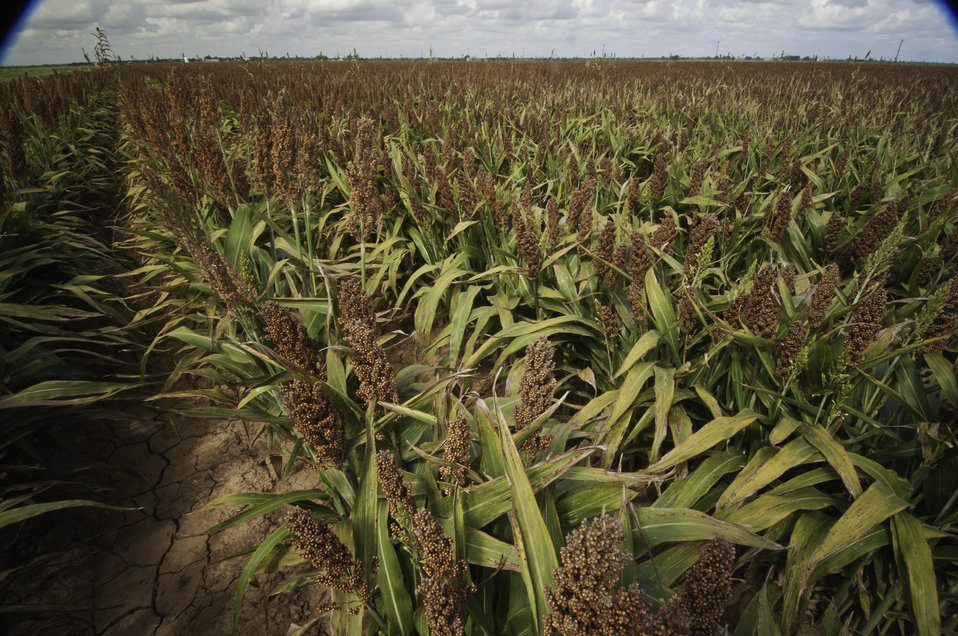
Grain sorghum grows on the Wilder Farms Navasota, TX on Aug. 23, 2013. The ground shows signs of the Texas drought but the crop shows no ill affects from the drought USDA photo by Bob Nichols.